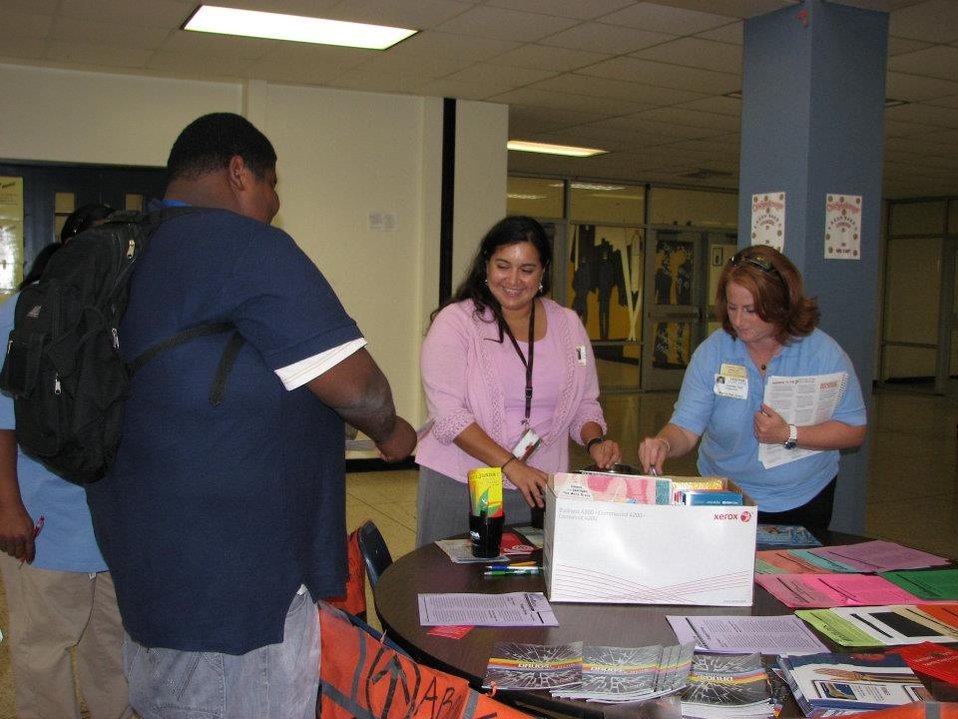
La Marque High School's NDFW event

Here are students getting information at La Marque High School's NDFW event. The all-day event included a poster contest, brochures and giveaways, and a Q&A session during lunch. Questions were facilitated by the Center for Addiction Research.